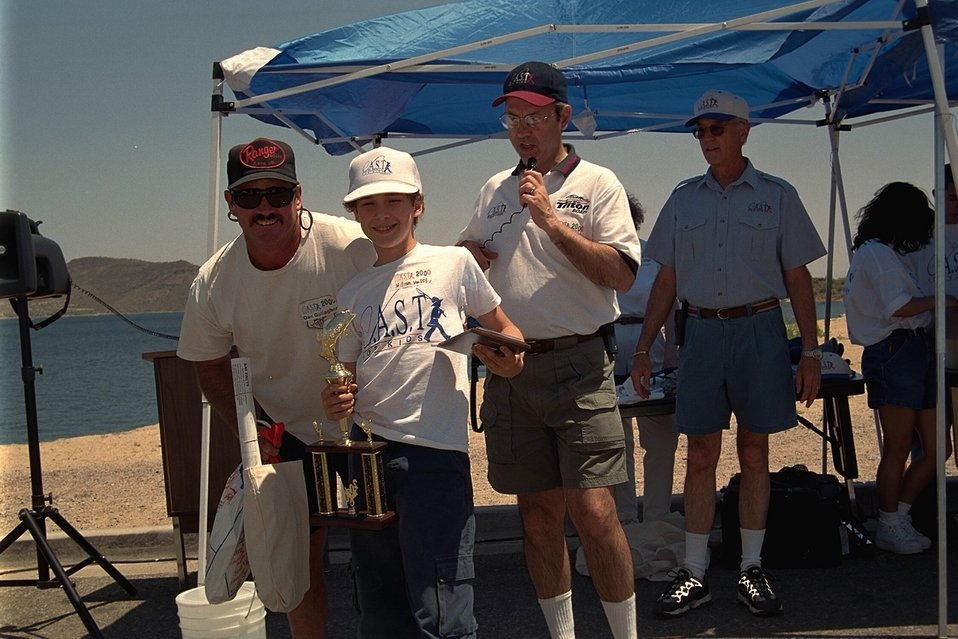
Everyone has a great time at Catch A Special Thrill (CAST), a day of fishing at Lake Pleasant for disabled children.